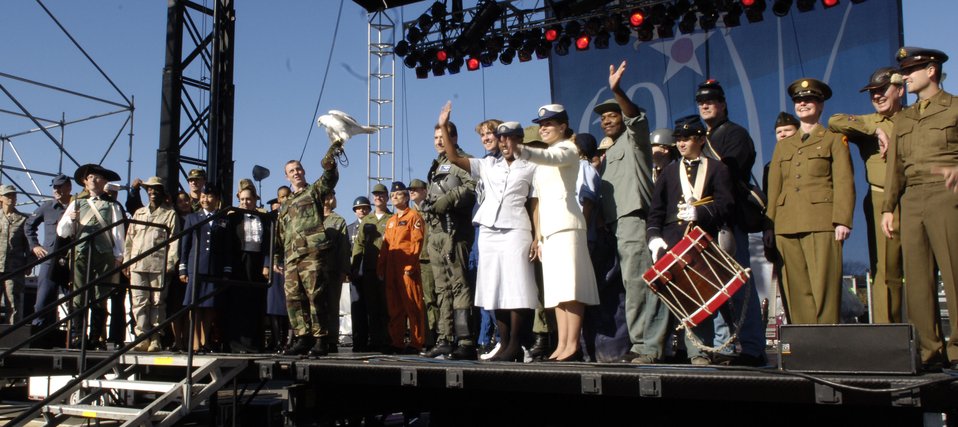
Air Force Memorial

Air Force Academy Cadet Second Class Sean Gorden brings Aurora the official Academy mascot onstage to join current and former members of the United States Air Force and its predecessor organizations present a parade of uniforms at an Air Force open house at the Pentagon on Saturday, Oct. 14, 2006. The open house is running in conjunction with the official ceremony to dedicate the Air Force Memorial. President George W. Bush will join Senior Defense Dept. and Air Force officials in a ceremony to present the memorial to the Nation. Designed by the late James Ingo Freed the memorial with its three soaring spires inspired by the U.S. Air Force Thunderbirds bomb burst manuever, pays tribute to and honors the patriotic men and women of the U.S. Air Force and its predeccessor organizations. An open house will run near the Pentagon in conjunction with the dedication ceremony which will feature performances by the U.S. Air Force Band, the U.S. Air Force Honor Guard drill team, and will culminate with a concert featuring country music performer LeeAnn Womack.